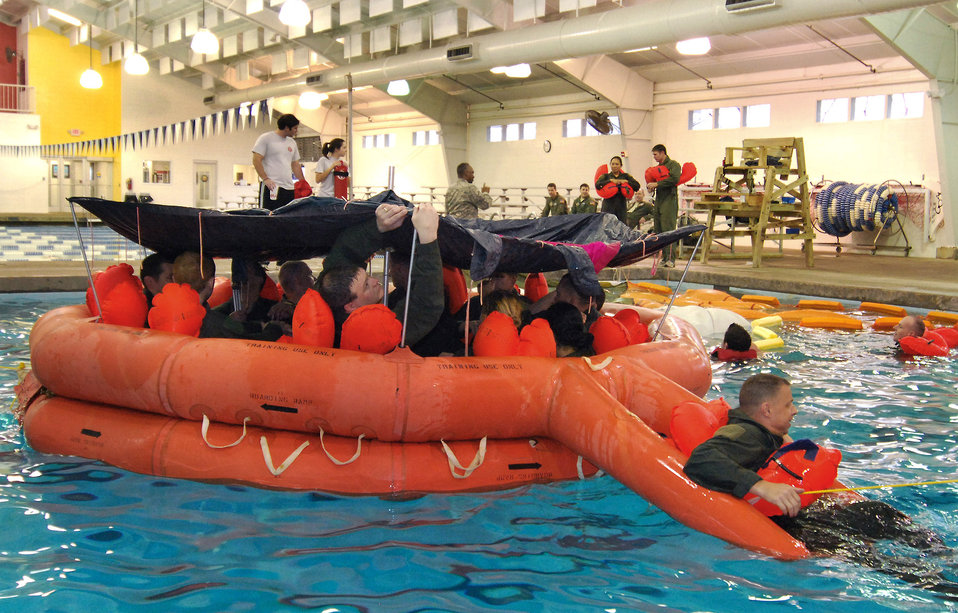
Water survival training

Aircrew members from the 94th Airlift Wing install the canopy shelter on a 20-person life raft during water survival training Feb. 4, 2011, at the Cobb Aquatic Center in Marietta, Ga.